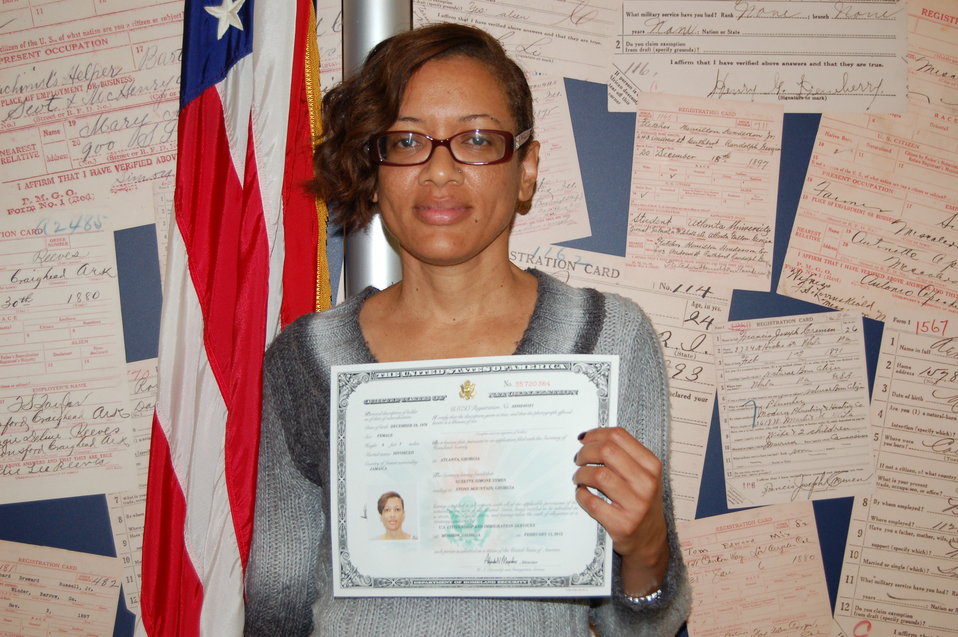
New Citizens